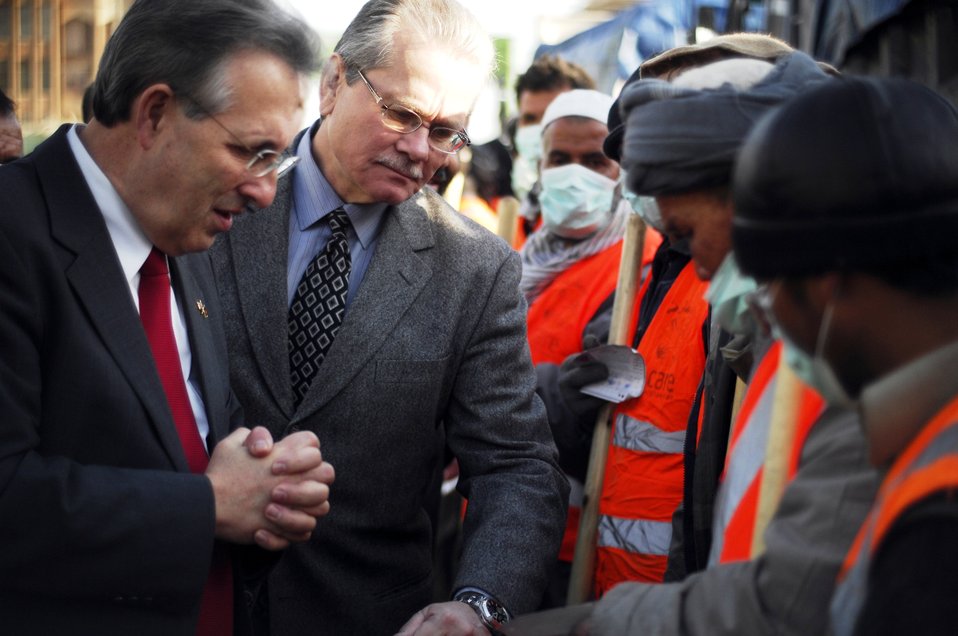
Care34